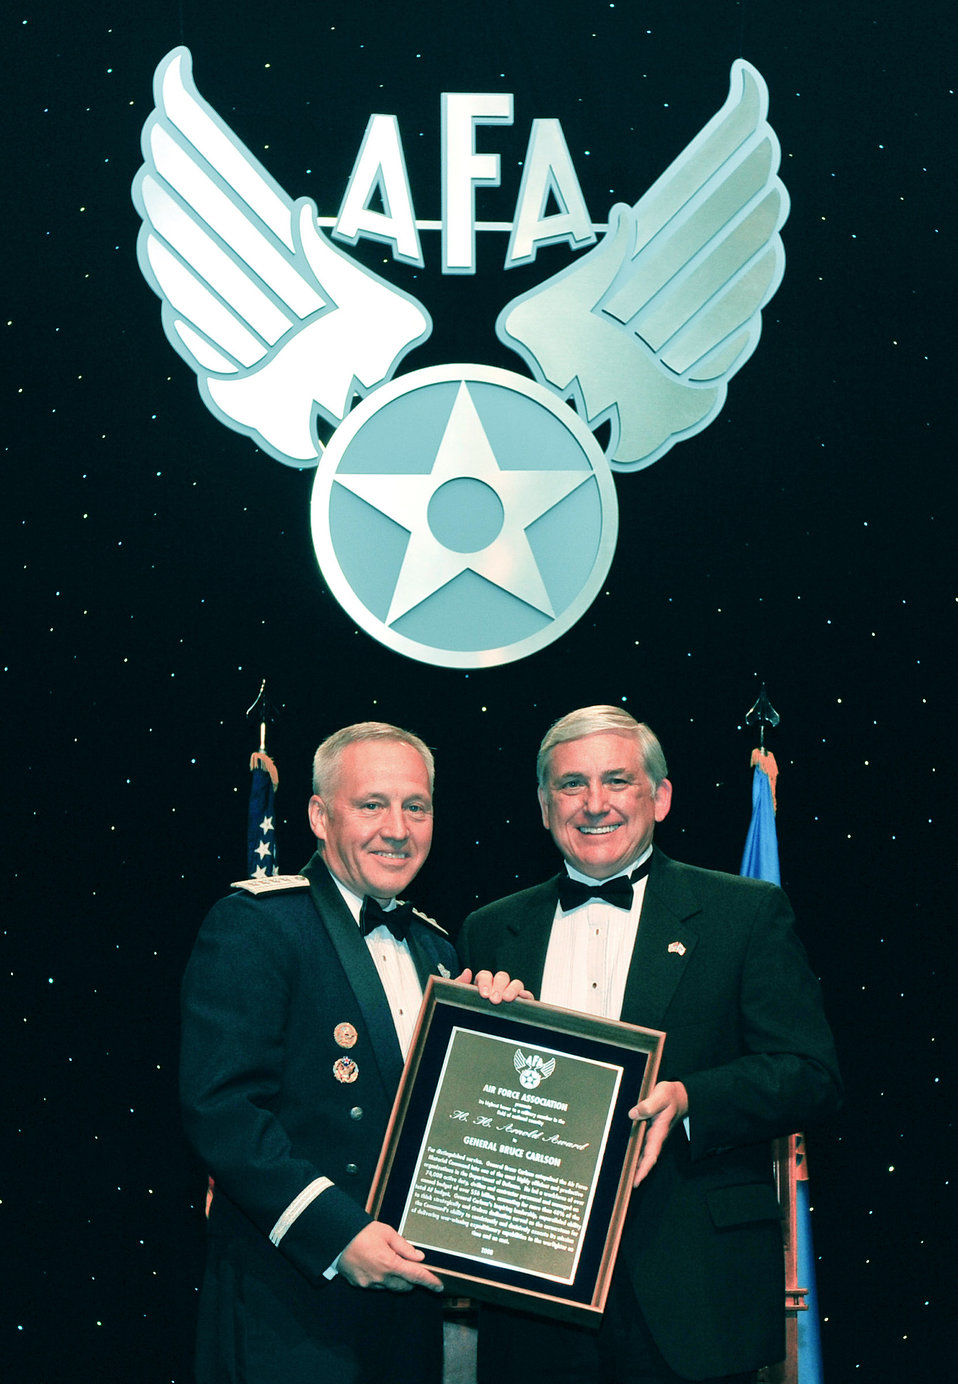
Air Force Association honors AFMC during conference

Gen. Bruce Carlson receives the H. H. Arnold award from Air Force Association chairman Robert Largent Sept. 17 at the Marriott Wardman Park Hotel in Washington, D.C. AFA hosted its 24th annual Air & Space Conference and Technology Exposition Sept. 15-17. General Carlson is the commander of Air Force Materiel Command.